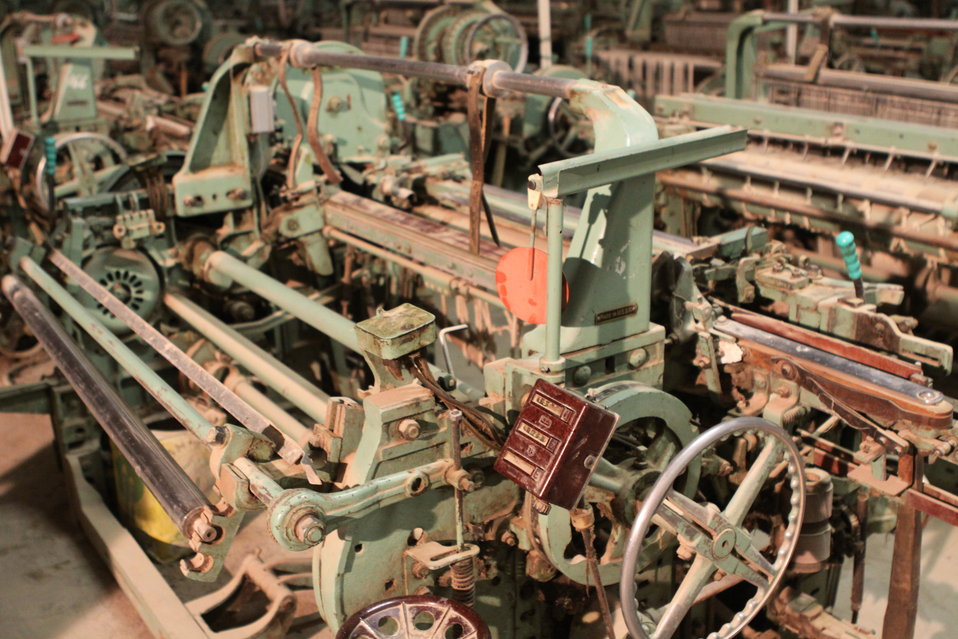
100525 Hirat Textile Company 736